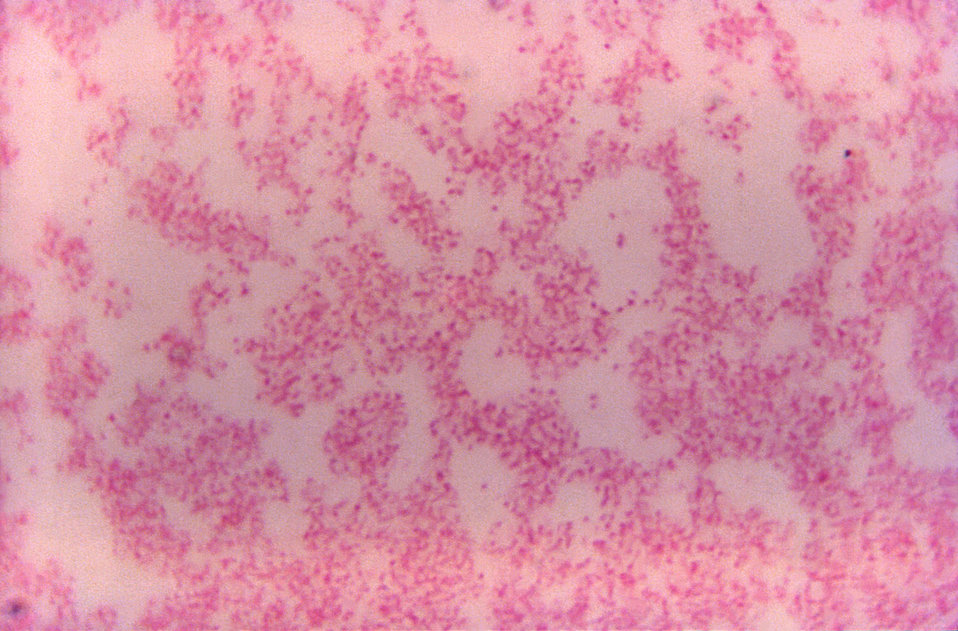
A photomicrograph of Francisella tularensis using a Safranin stain, Magnified 1000X.